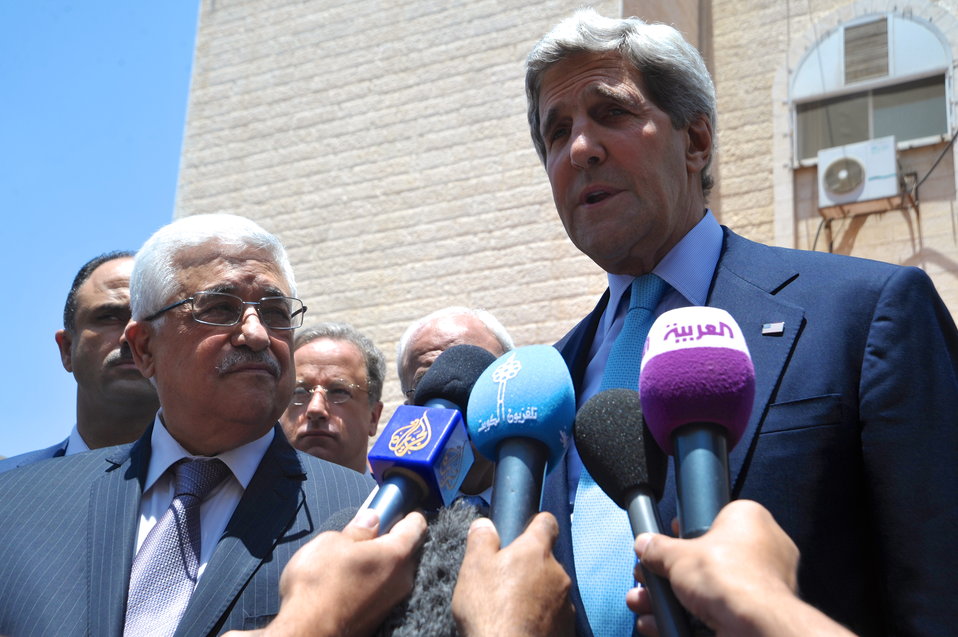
Secretary Kerry Addresses Media in Ramallah

U.S. Secretary of State John Kerry, flanked by Palestinian Authority President Mahmoud Abbas, addresses a gaggle of reporters after concluding their meeting in Ramallah, West Bank, on June 30, 2013.